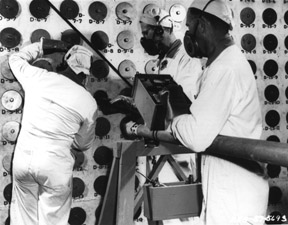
REMOVING 'SPENT' URANIUM FROM SOUTH FACE OF REACTOR, BROOKHAVEN NATIONAL LABORATORY.